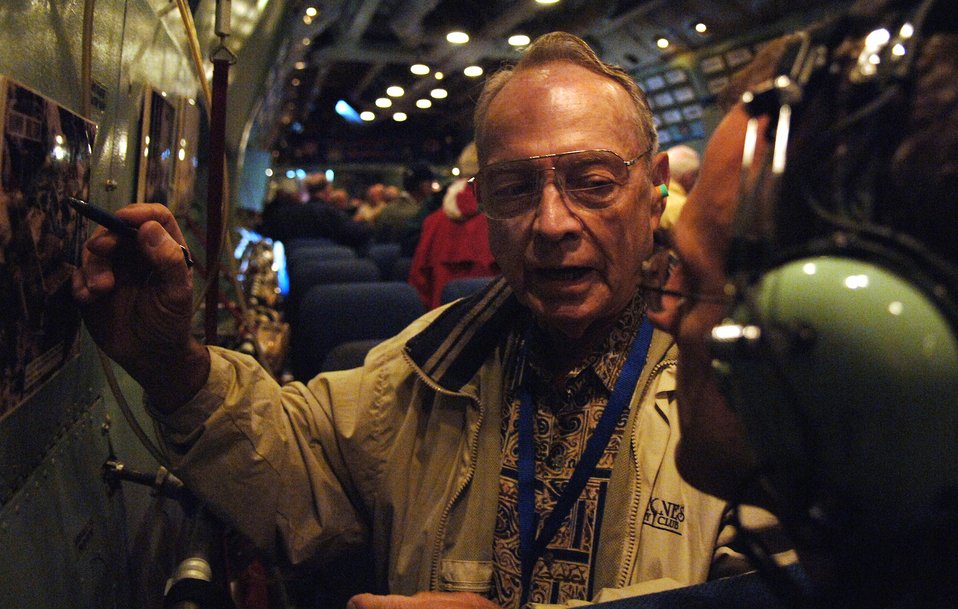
'Hanoi Taxi' arrives at National Museum of the Air Force

Jim Lamar (left) talks to Tech. Sgt. Rick Sforza on Saturday, May 6, 2006, about an aerial photograph of the